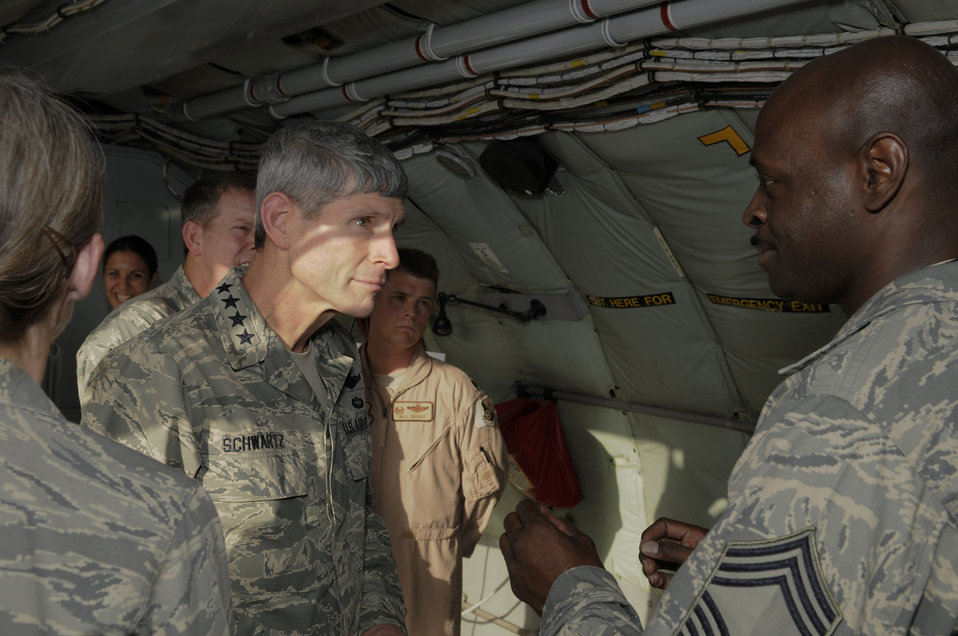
CSAF visits Southwest Asia

Chief Master Sgt. Antonio Baxter discusses KC-135 maintenance issues with Air Force Chief of Staff Gen. Norton Schwartz Oct. 20. The 379th Air Expeditionary Wing is General Schwartz's first stop on his first tour of the U.S. Air Forces Central area of responsibility since his appointment as the Air Force chief of staff. Chief Baxter is assigned to the 340th Aircraft Maintenance Unit.